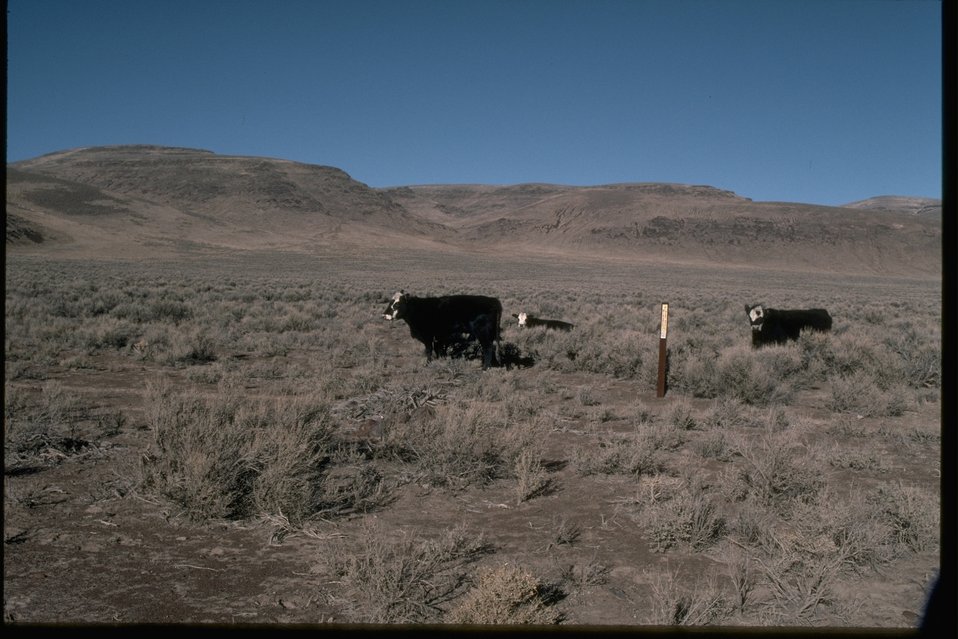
Cattle grazing near what looks like a Wilderness Study Area sign in the Sheep Mountains.